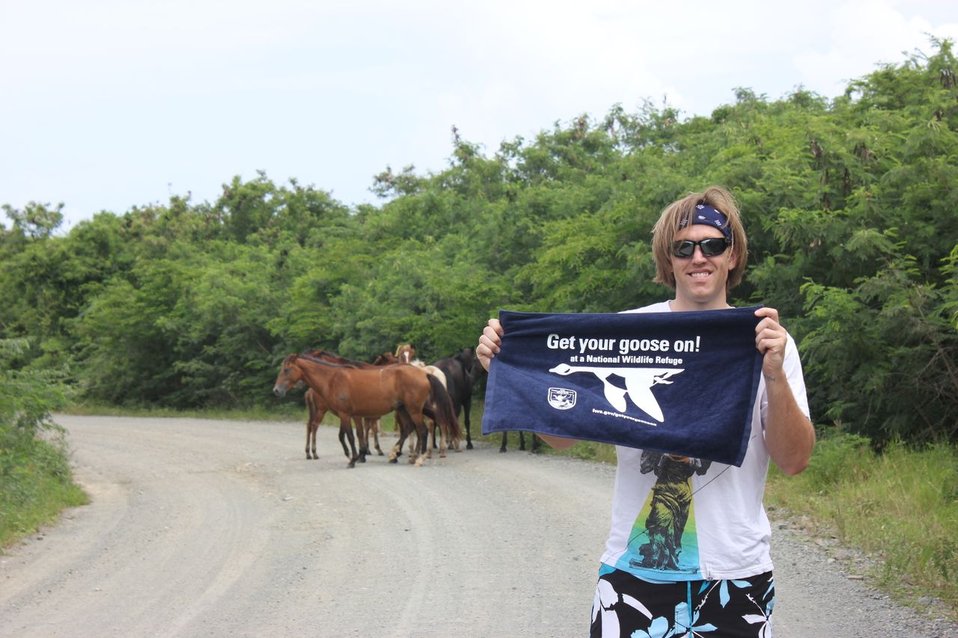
Wild Horses on Vieques National Wildlife Refuge

Land is scarce in the islands, so residents of Vieques, Puerto Rico, allow their horses to free range much of the year. As a result, many 'wild' horse viewing opportunities exist across Vieques NWR.